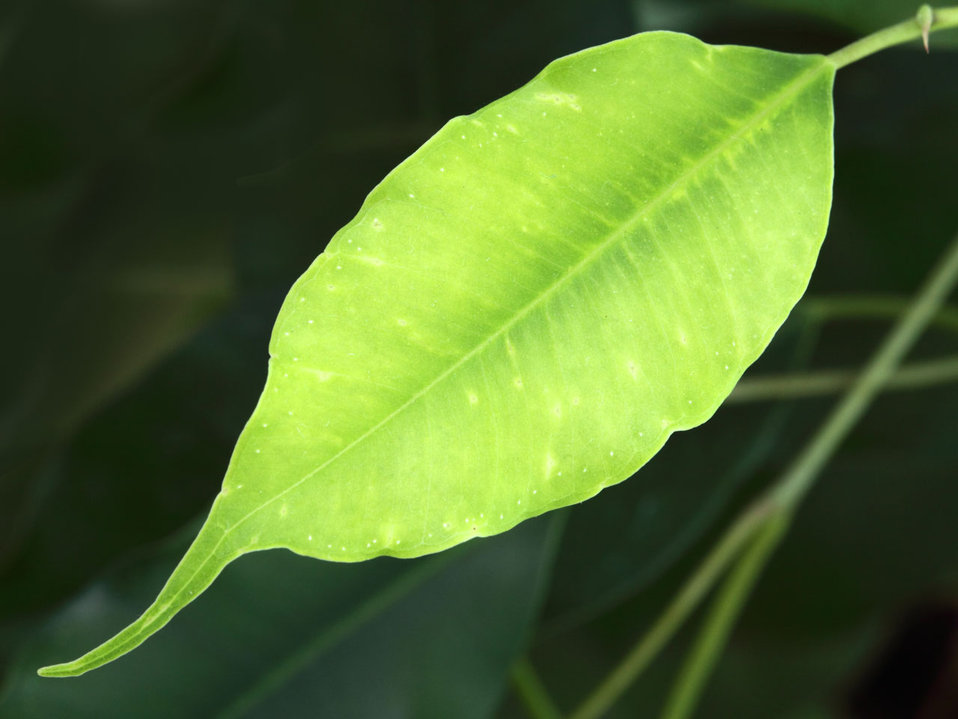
Fresh leaf

Fresh new green leaf on ficus.